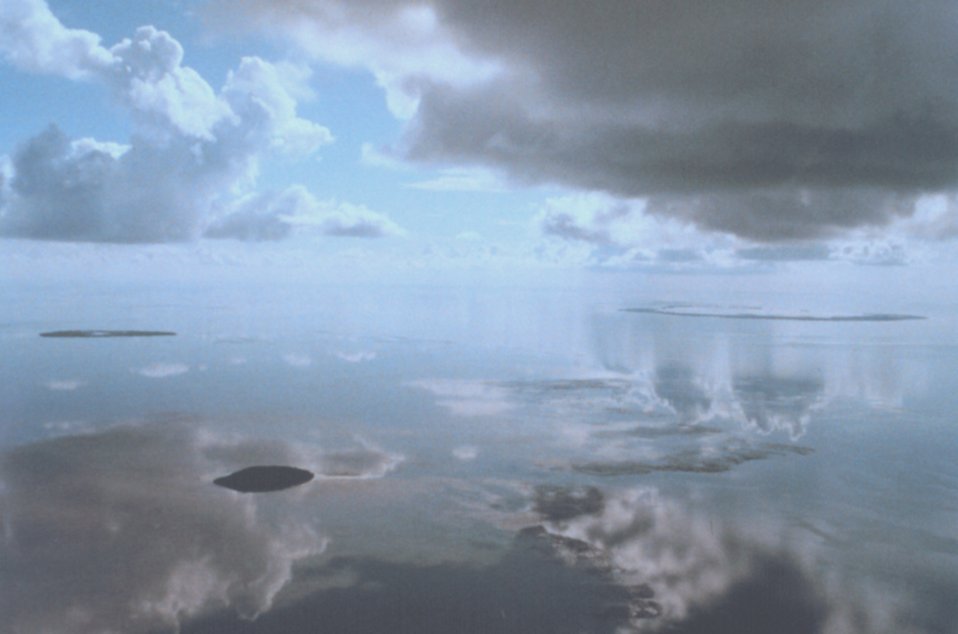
Reflections on a mirror-smooth sea make it difficult to determine where the sea begins on a horizonless morning.